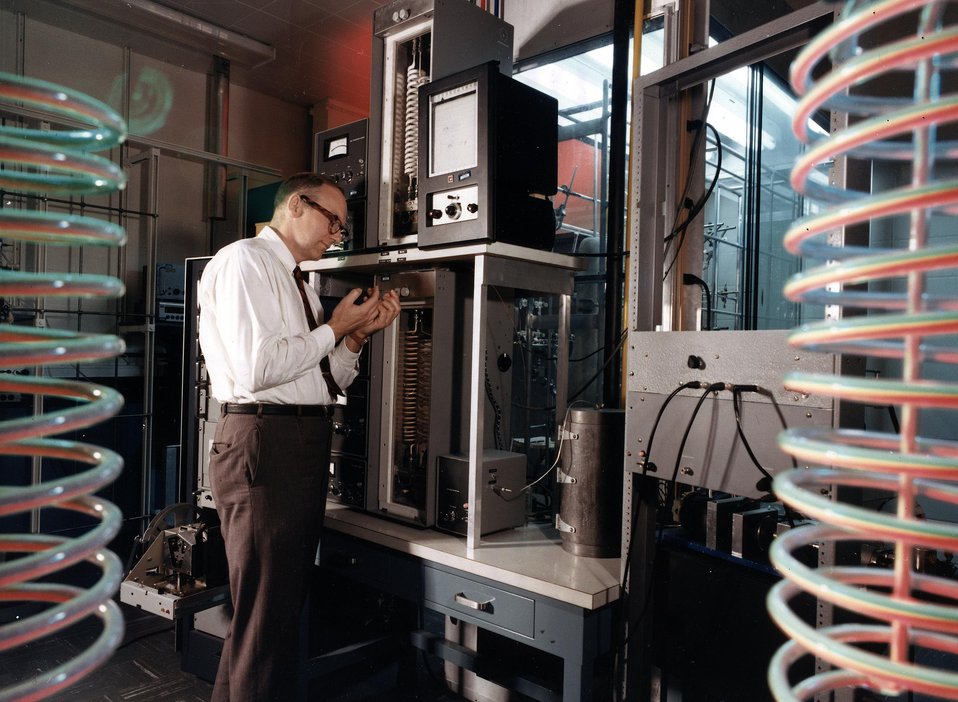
The gas-liquid chromatographic apparatus. c. 1966